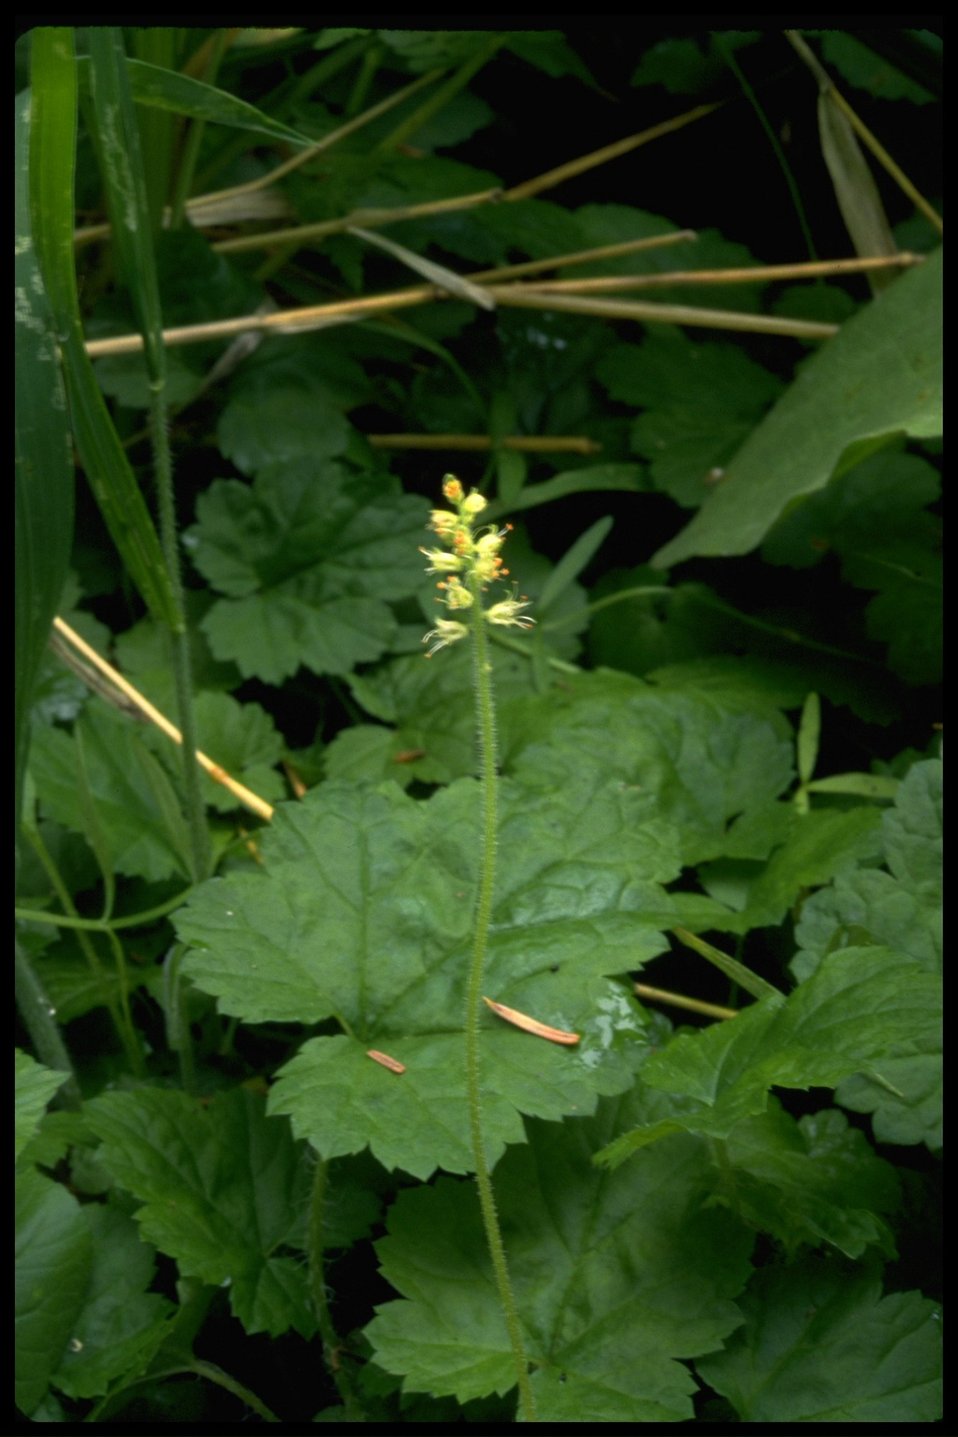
Medium shot of bensoniella (Bensoniella oregana).